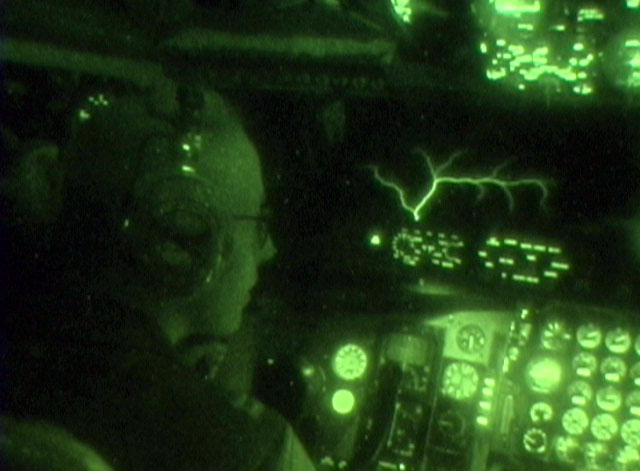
St. Elmo's Fire

OPERATION IRAQI FREEDOM -- Capt. Rachel Tukey, 28th Expeditionary Air Refueling Squadron, watches a naturally occuring phenomenon known as St. Elmo's Fire on the windshield of her KC-135T Stratotanker after refueling a B-52 Stratofortress.